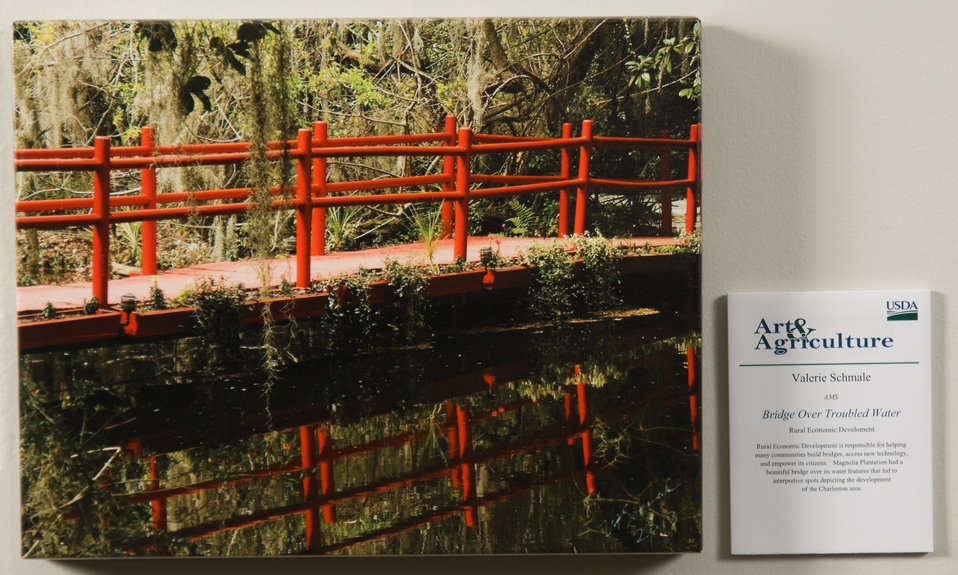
Online Viewer's Choice entries of the 2013 Art & Agriculture, Tuesday, July 9, 2013, in the South Building, Washington, D.C. Themes were expressed by employees from across the department and the contest was open to full-time and part-time USDA employees. Winning artwork will be displayed till the end of the year. U.S. Artistic expression is a creative outlet that is vital for an individual to grow and develop.